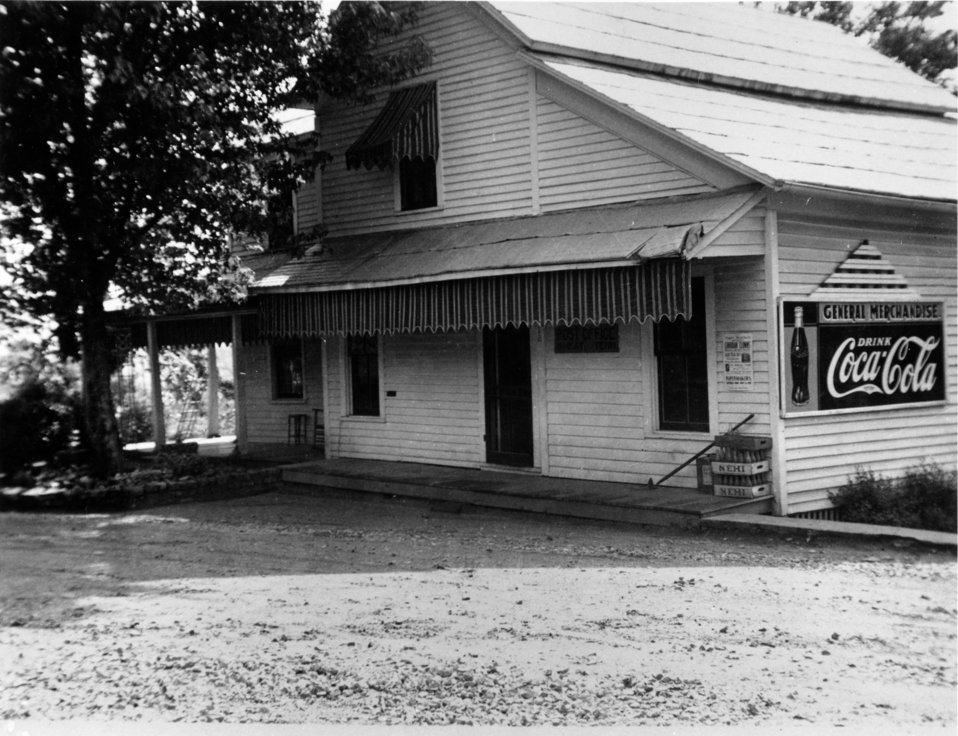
Early settlers at Oak Ridge